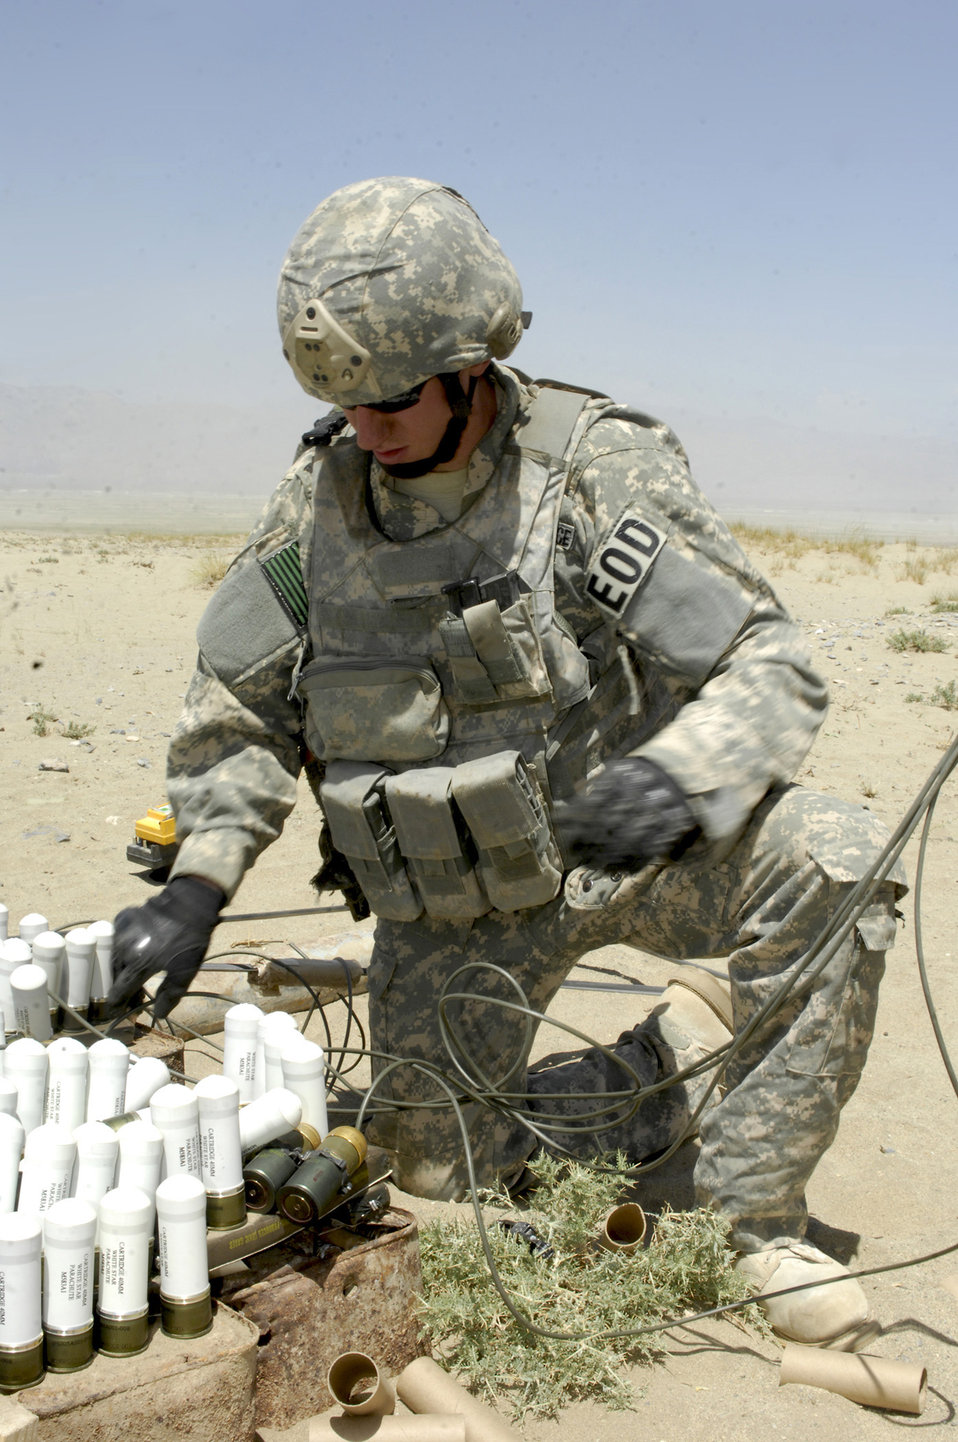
Bagram Airmen destroy explosives, munitions

Staff Sgt. Greg Talley inserts blasting caps into C-4 explosive charges at a ordnance disposal range Aug. 2 near Bagram Airfield, Afghanistan. Several hundred pounds of mixed ordnance, including discarded Soviet munitions from the 1970s, were destroyed. Sergeant Talley is an explosive ordnance disposal technician with the 755th Air Expeditionary Group, and deployed from Dyess Air Force Base, Texas.